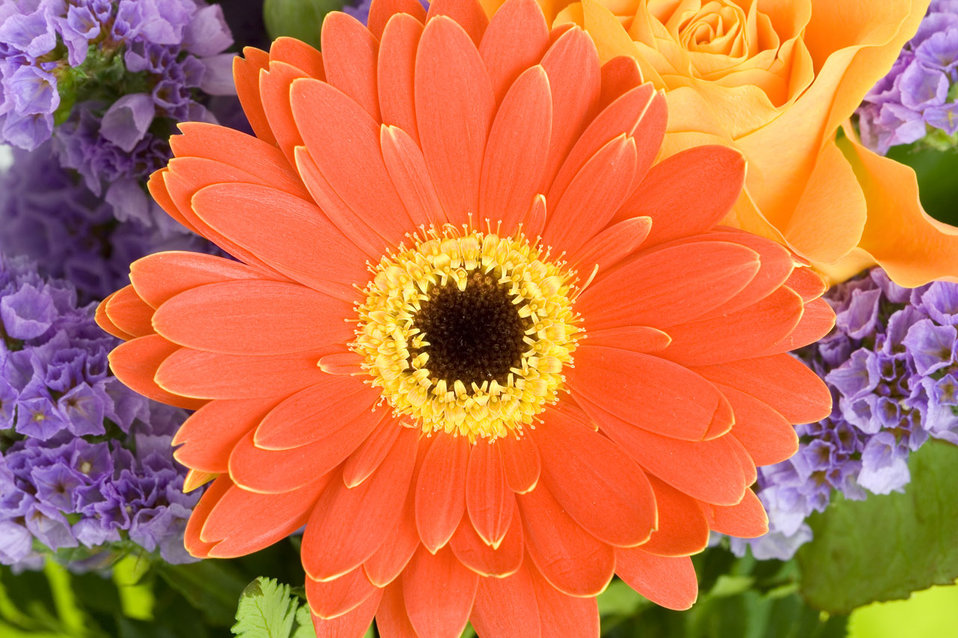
Gerbera

Red gerbera in bouguet.